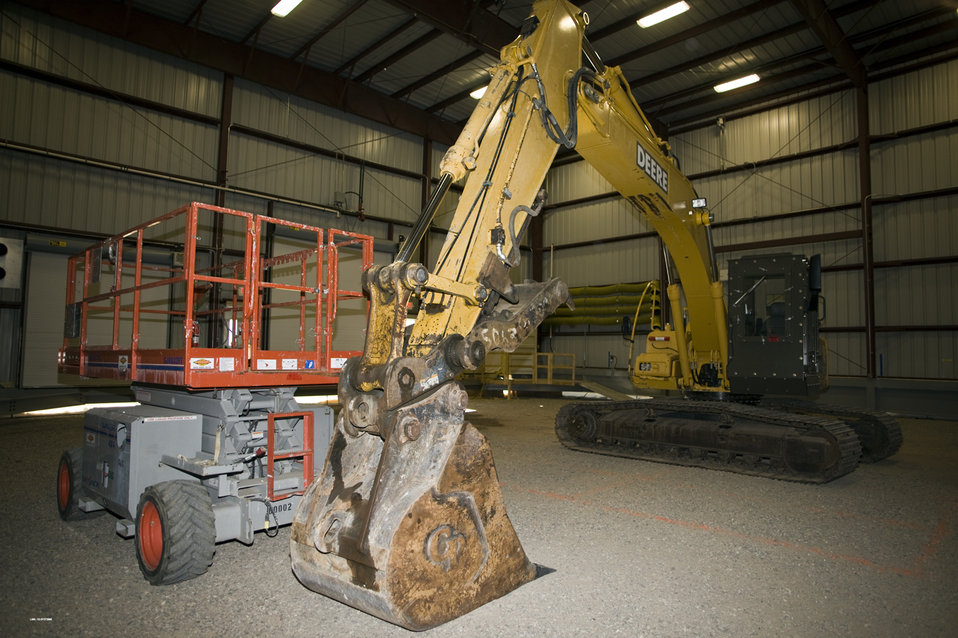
LANL Infra-red equipment

Each of the 13 digging enclosures at LANL’s World War II landfill has its own remote control room. Controllers have access to sensors, video, and infra-red equipment, and can trigger fire suppression systems if necessary.